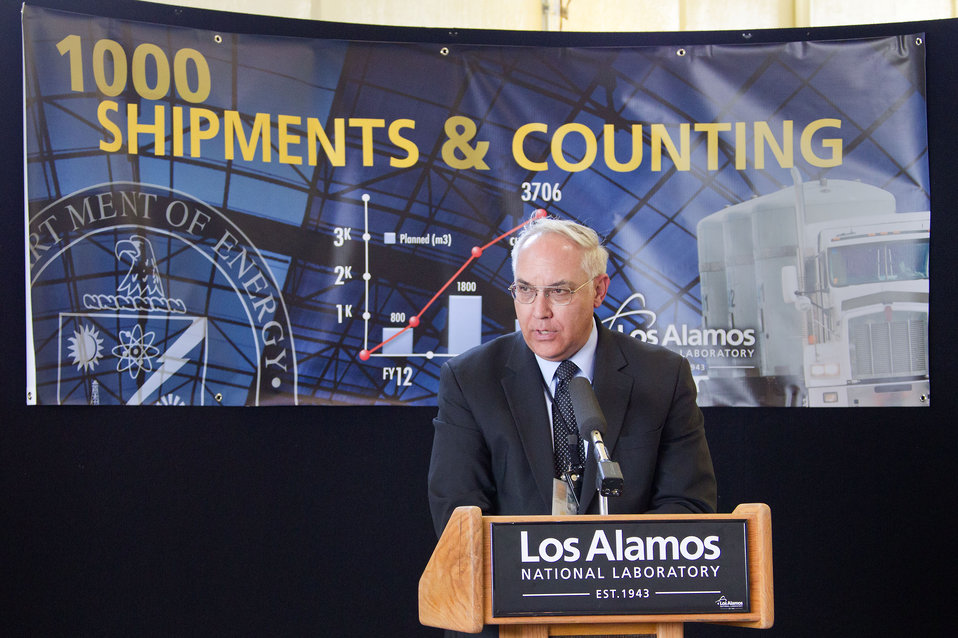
1000th Shipment of TRU Waste from LANL